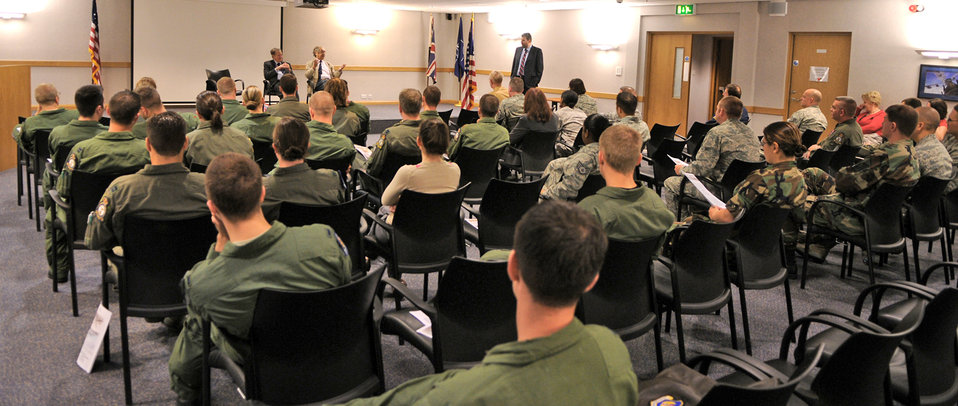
Former RAF POWs share experiences with Mildenhall Airmen

A crowd of about 50 Airmen at Royal Air Force Mildenhall, England listen as two former Royal Air Force airmen recount their experiences as POWs in WWII Sept. 19, 2009. The pair were both interred at Stalug Luft III, the German POW camp featured in the movie,